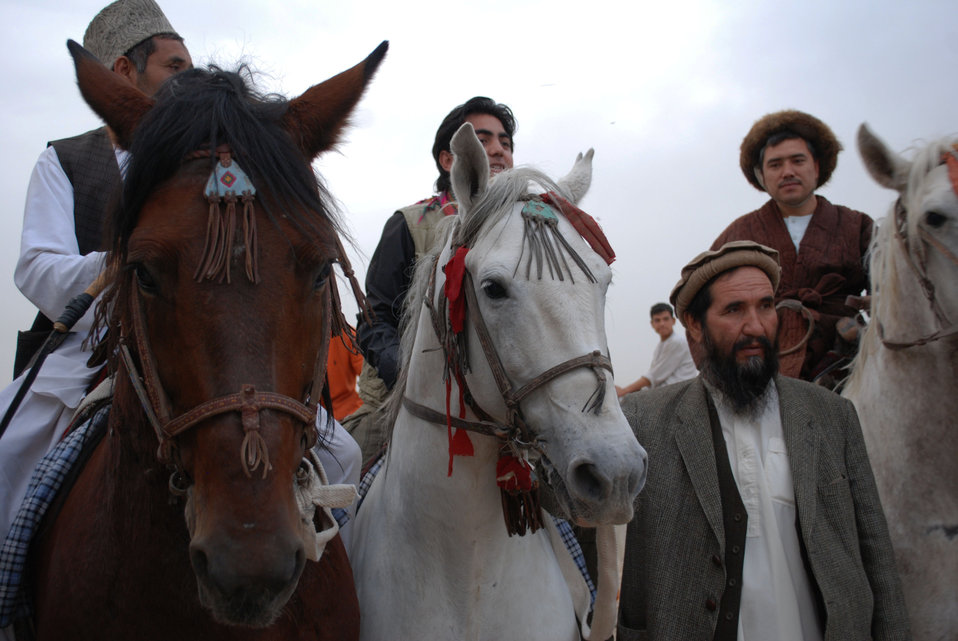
'On the Road' in Balkh Province